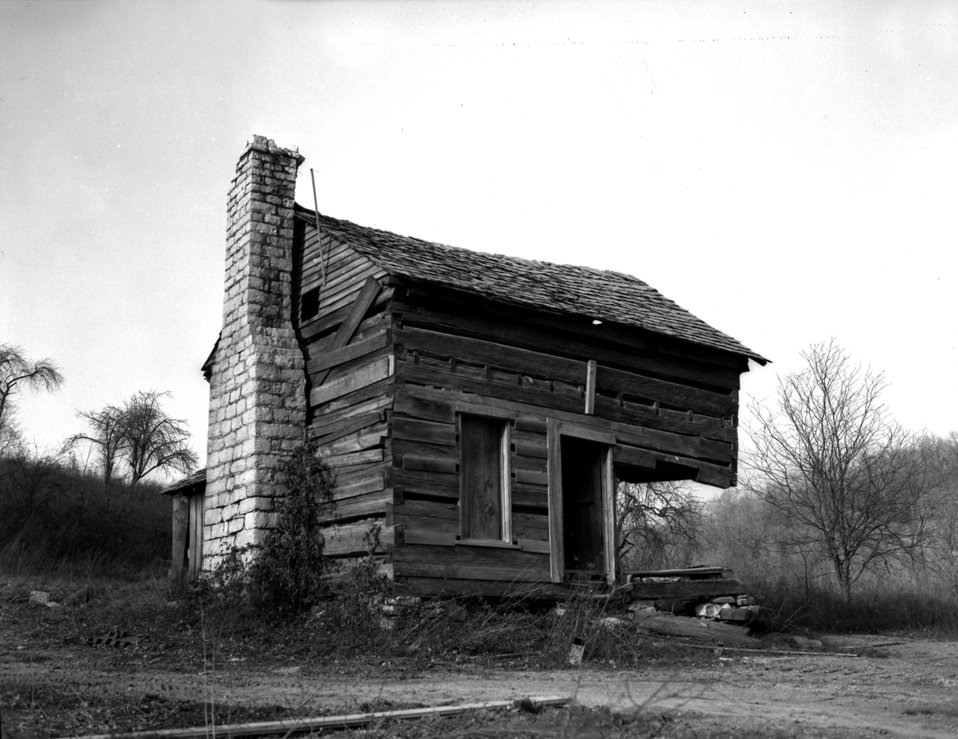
Log Type Cabin Oak Ridge

3261-1 DOE photo Ed Westcott 1-23-1947 Oak Ridge Tennessee